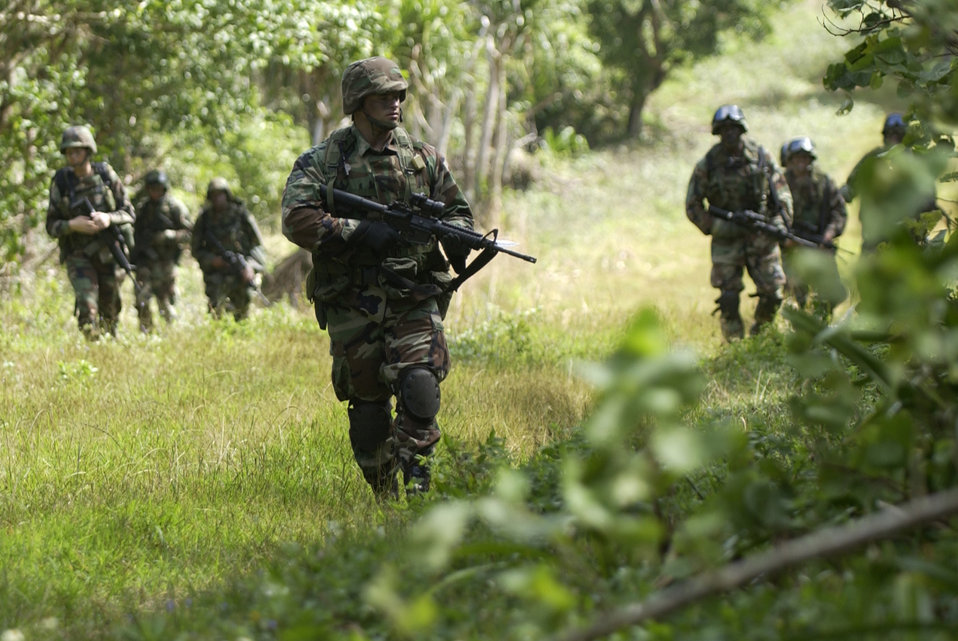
Jungle tactics

ANDERSEN AIR FORCE BASE, Guam -- Airman 1st Class Dennis Nugent (front) leads a tactical patrol during a simulated attack on an urban terrorist target during an exercise here Feb. 17. The exercise consists of military operation urban terrain training, sniper training, navigation training, and breaching techniques. Airman Nugent is a security forces Airmen with the 613th Contigency Response Group.